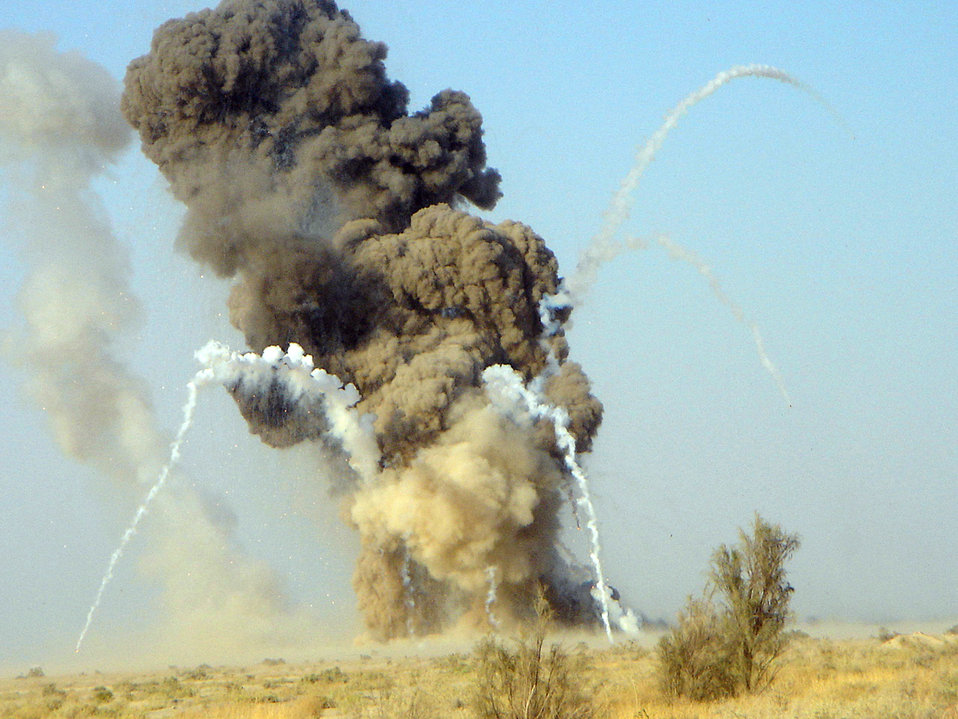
Big bang

IRAQ (AFPN) -- The first explosion of Operation Big Bang erupts as scheduled. Volunteers moved ordnance to Ali Base, Iraq, for disposal during Operation Big Bang.